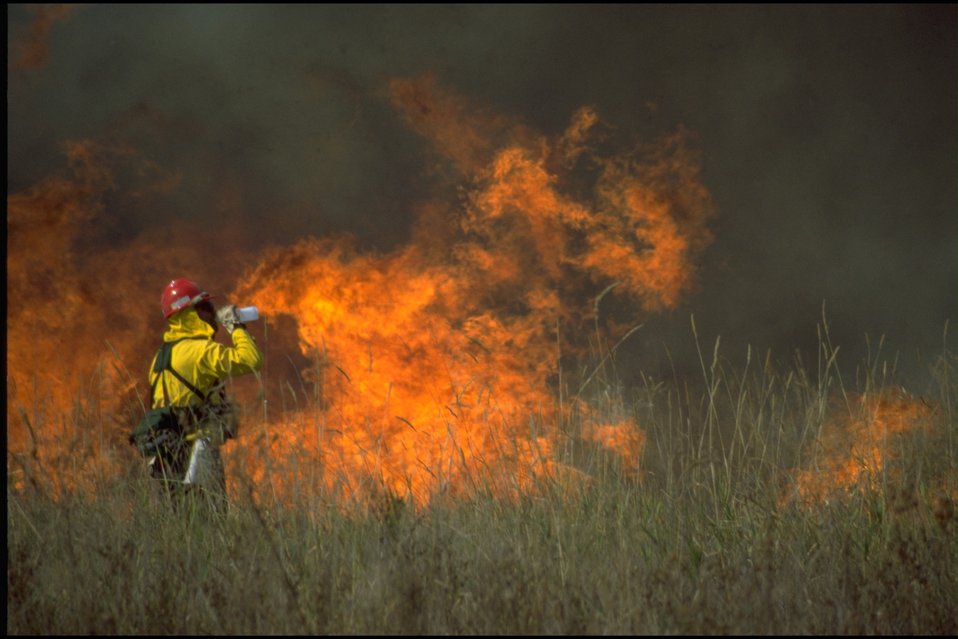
Spectra Physics Burn - Wetlands.